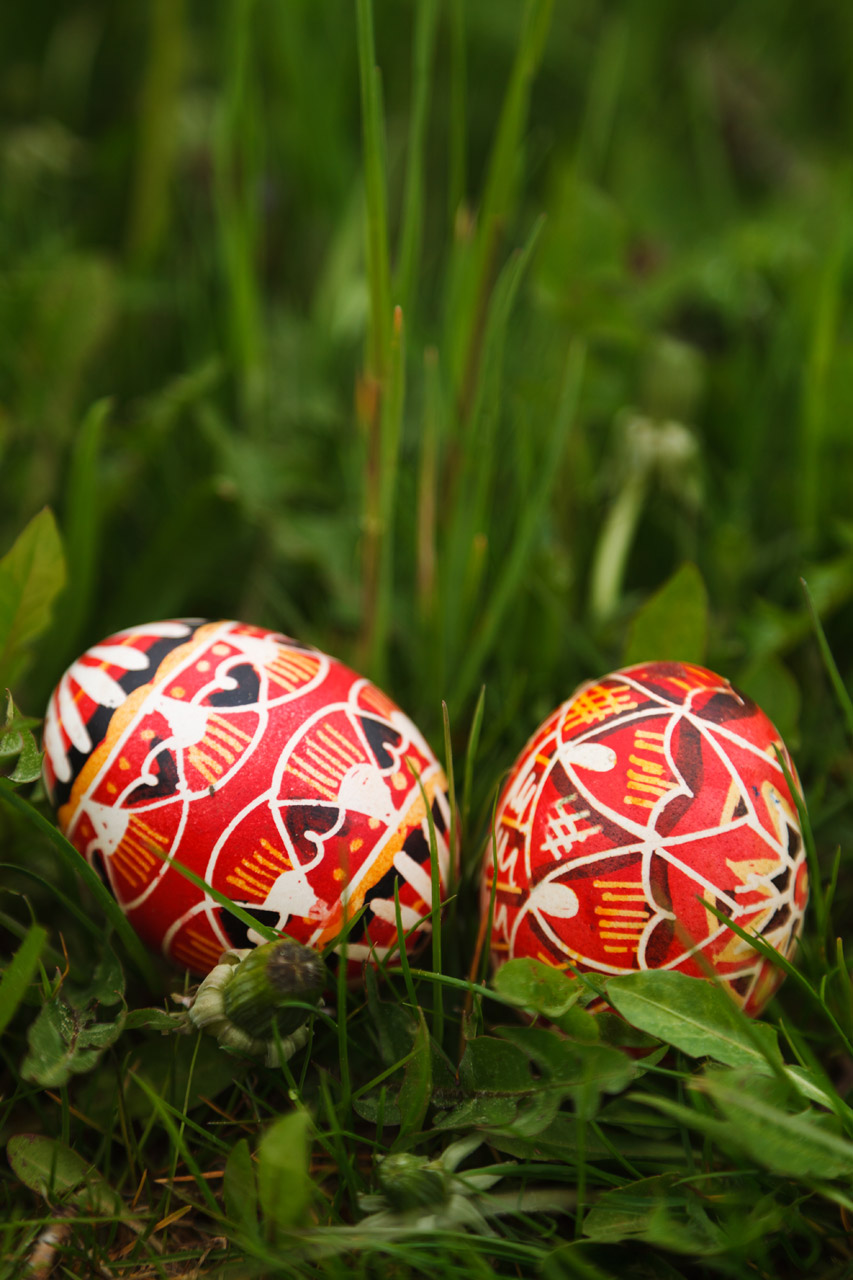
Easter eggs in grass

Colorful red easter eggs in fresh green grass.